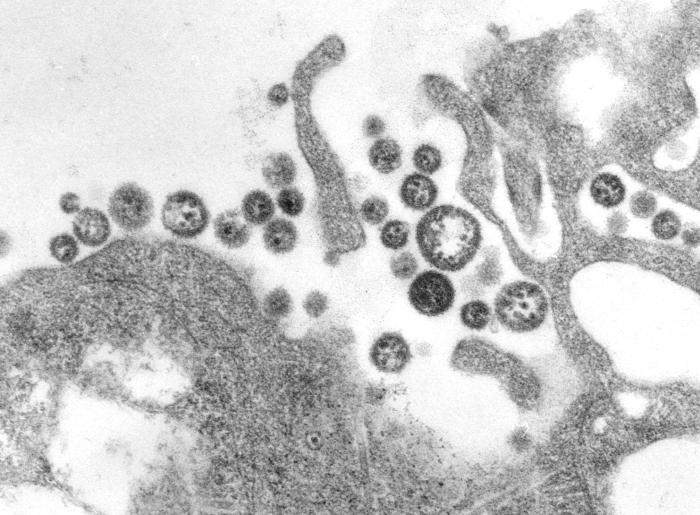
This transmission electron micrograph (TEM) depicted numbers of Lassa virus virions adjacent to some cell debris. The virus, a member of the virus family Arenaviridae, is a single-stranded RNA virus, and is zoonotic, or animal-borne that can be transmitted to humans. The illness, which occurs in West Africa, was discovered in 1969 when two missionary nurses died in Nigeria, West Africa.In areas of Africa where the disease is endemic (that is, constantly present), Lassa fever is a significant cause of morbidity and mortality. While Lassa fever is mild or has no observable symptoms in about 80% of people infected with the virus, the remaining 20% have a severe multisystem disease. Lassa fever is also associated with occasional epidemics, during which the case-fatality rate can reach 50%.